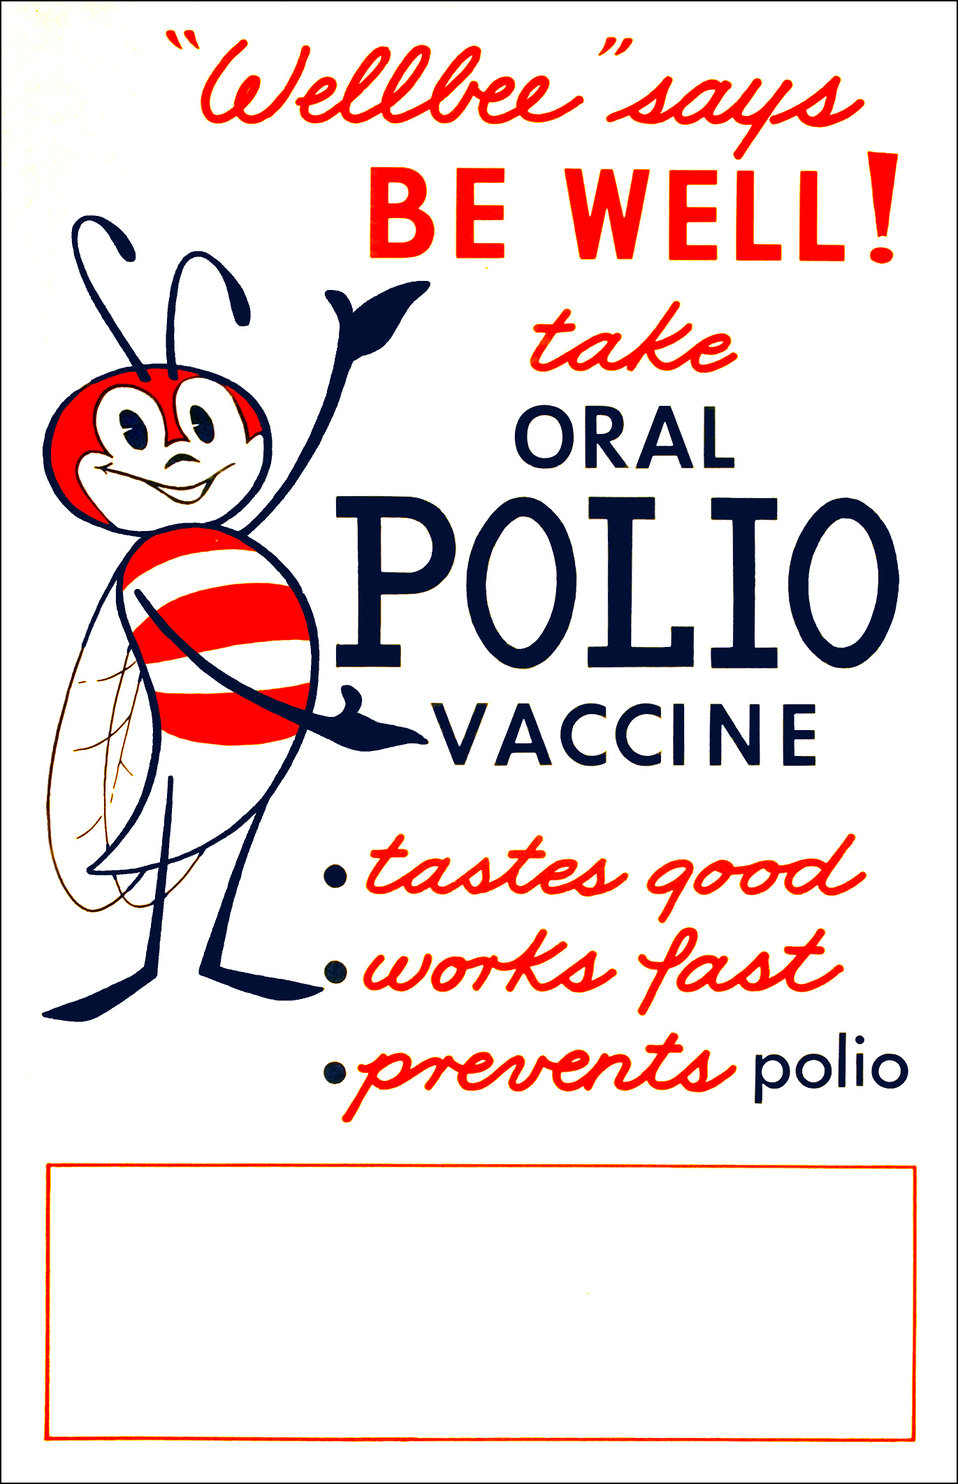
This 1963 poster featured CDC's national symbol of public health, the "Wellbee", who was depicted here encouraging the public to receive an oral polio vaccine.